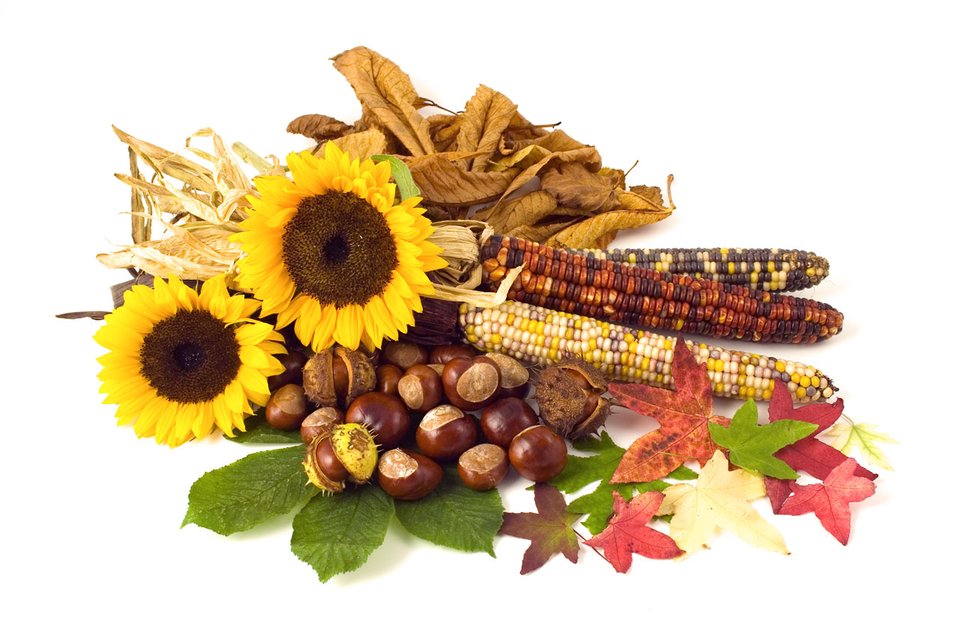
Autumn still life on white background.